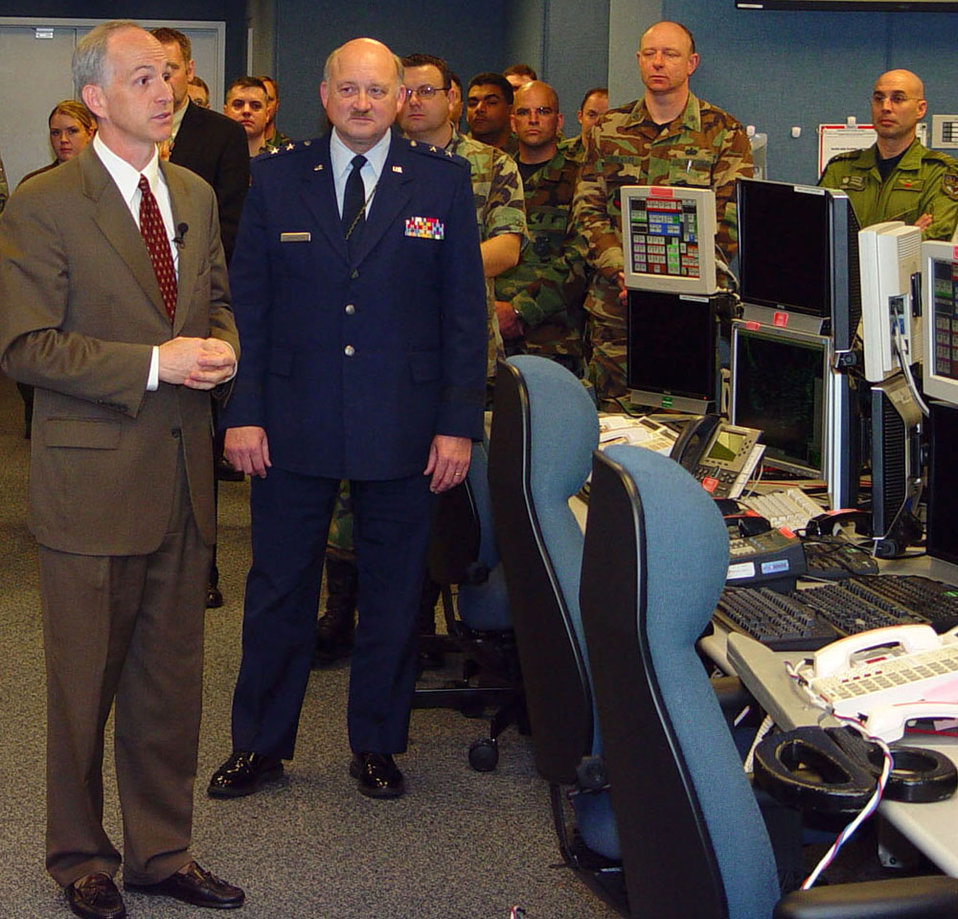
Western Air Defense Sector ops center opens

Representative Adam Smith (left) and Maj. Gen. Timothy J. Lowenberg preside at the opening of the Western Air Defense Sector's state-of-the-art operations center Nov. 20. The ceremony culminated an 18-month effort, with WADS now a significant, technically advanced deterrent against asymmetrical threats over a significant portion of America's airspace. Congressman Smith represents Washington State's 9th District; General Lowenberg is Washington State's adjutant general.